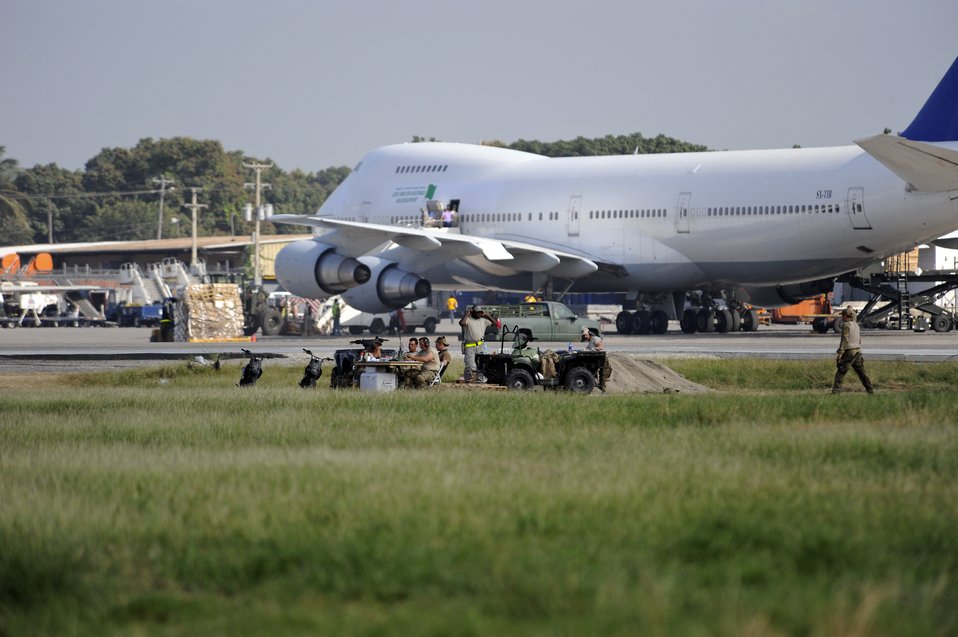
Combat controllers from 23rd Special Tactics Squadron, Hurlburt Field, Fla., talk to aircraft circling the international airport in Port-au-Prince, Haiti. In the initial days of Operation Unified Response air operations were similar to the Berlin Airlift with aircraft landing every five minutes. Aircraft from all over the world fly in and out to drop off humanitarian aid and transport people out of the Haiti in the aftermath of the devastating earthquake that struck the country Jan. 12, 2010.